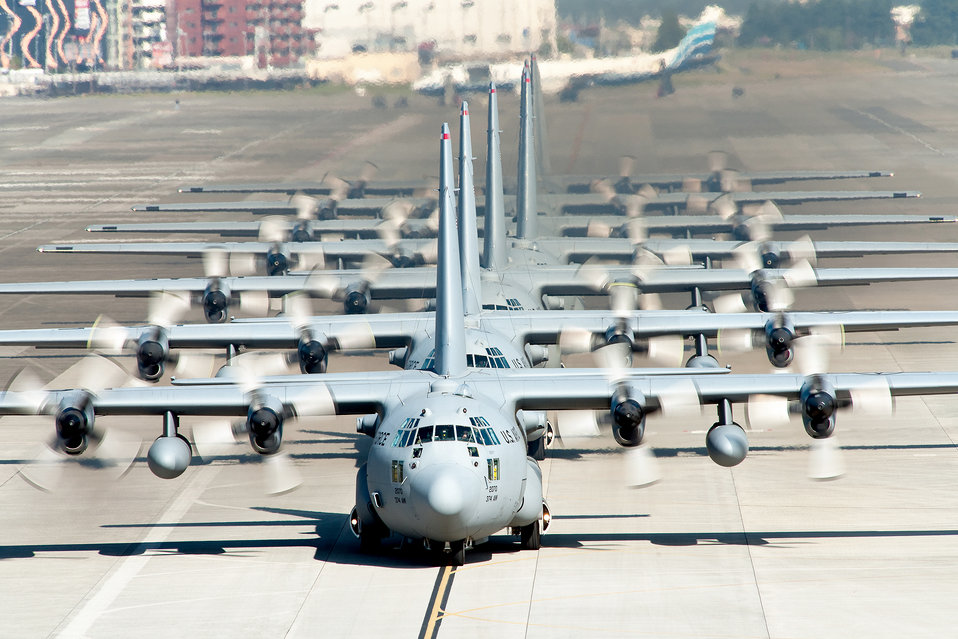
Samurai Surge PB

C-130 Hercules aircraft from the 36th Airlift Squadron taxi out for a mission during a seven-ship sortie Nov. 4, 2010, at Yokota Air Base, Japan. The sortie was part of a Samurai Surge exercise. The squadron is the only forward-based tactical airlift squadron in the Pacific region. They provide C-130 aircrews to conduct theater airlift, special operations, aeromedical evacuation, search and rescue, repatriation and humanitarian relief missions.